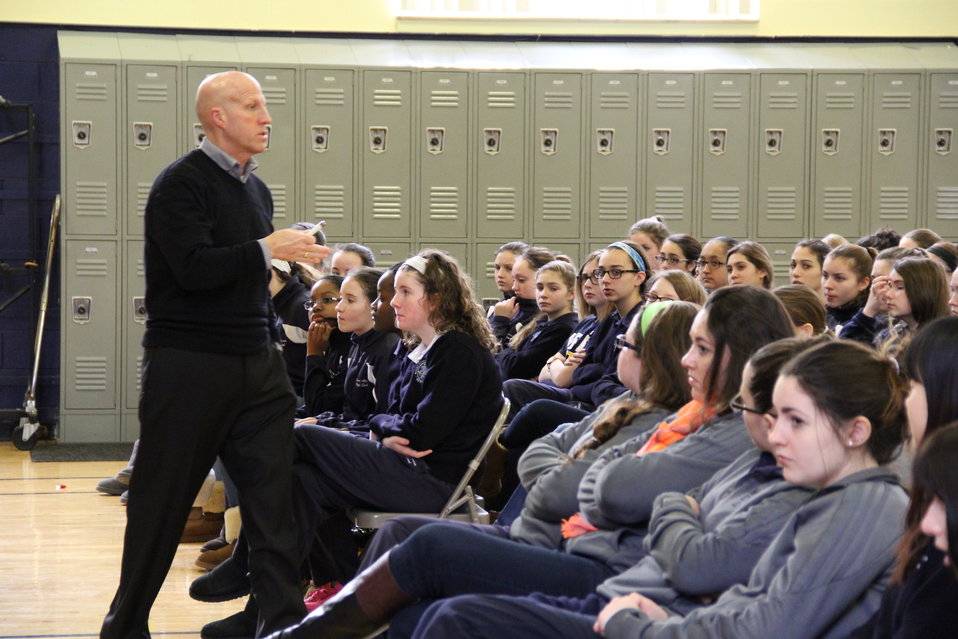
Shattering the Myths at MAHS